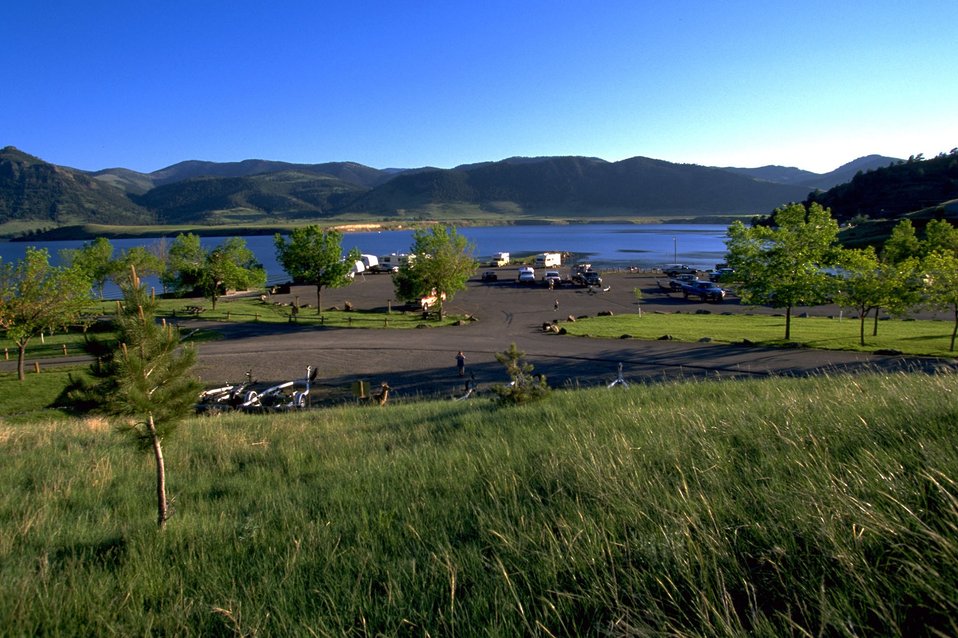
Parking Area at Holter Lake Campground